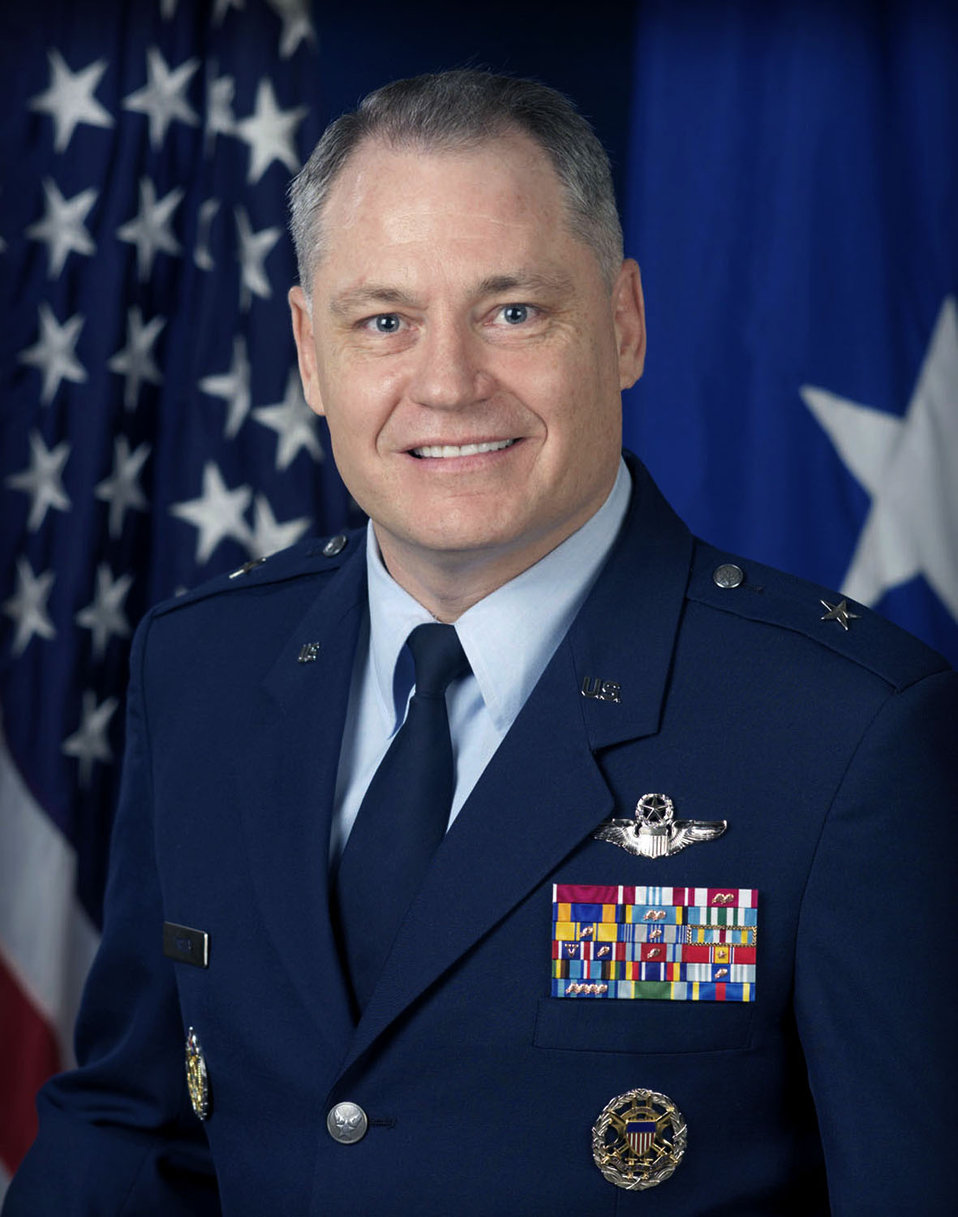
Elmendorf commander

Brig. Gen. Thomas L. Tinsley.